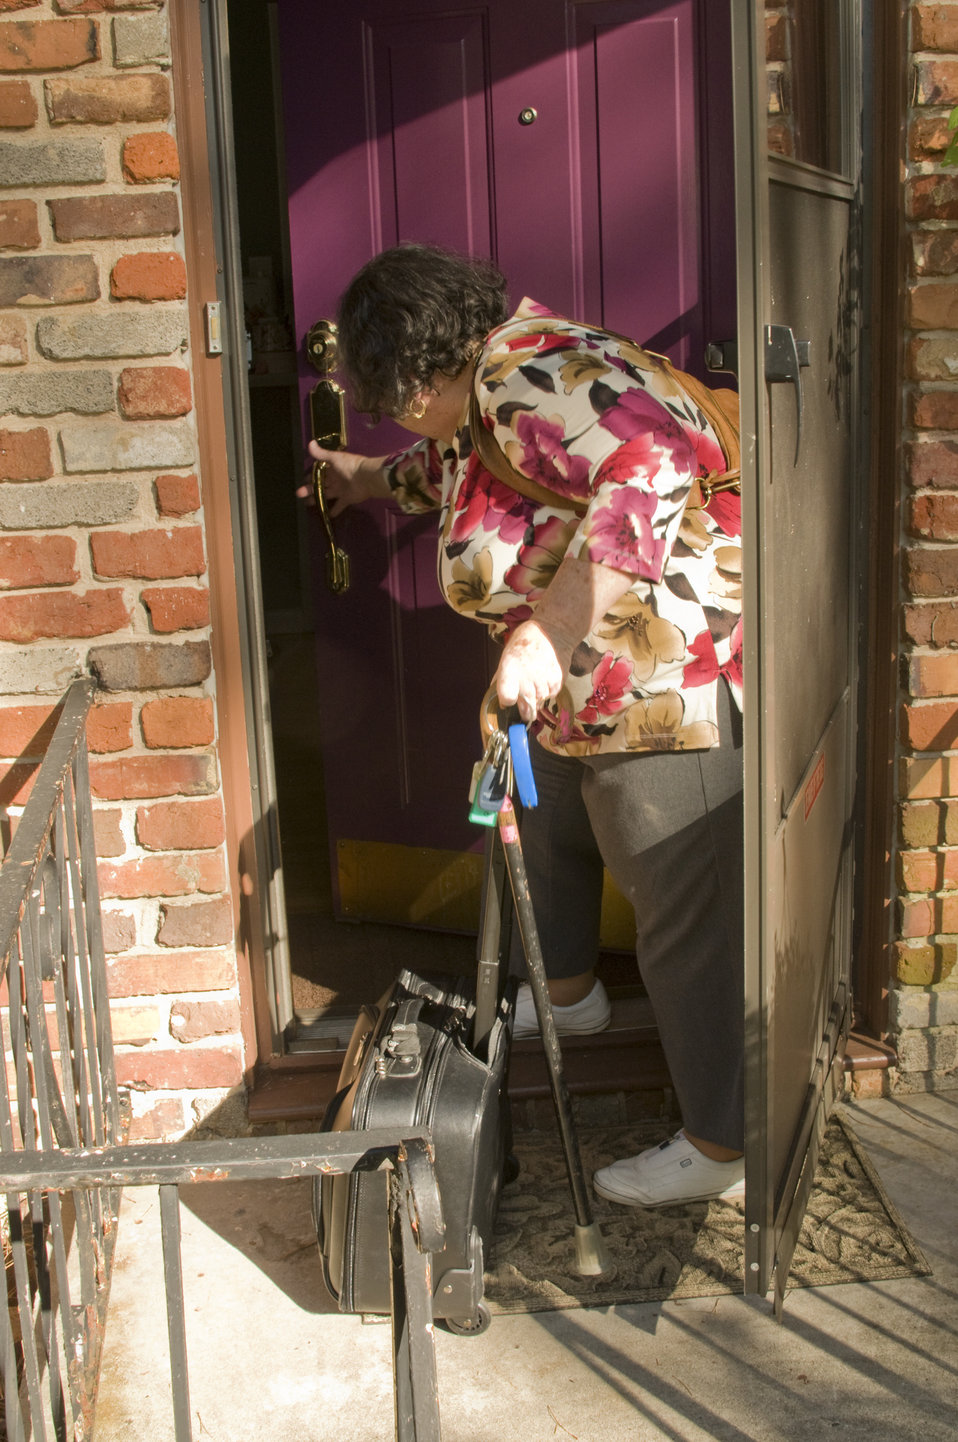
The woman pictured here is a rheumatoid arthritis patient, and was not letting her painful condition impeded her from carrying on with her daily activities, which included the use of a baggage carrier that she was using to move a small piece of luggage over the threshold of her front door. After having fully exited from her home, she was now in the process of locking her front door. Note that in her left hand she held her cane, the handle to the luggage carrier and her keys.